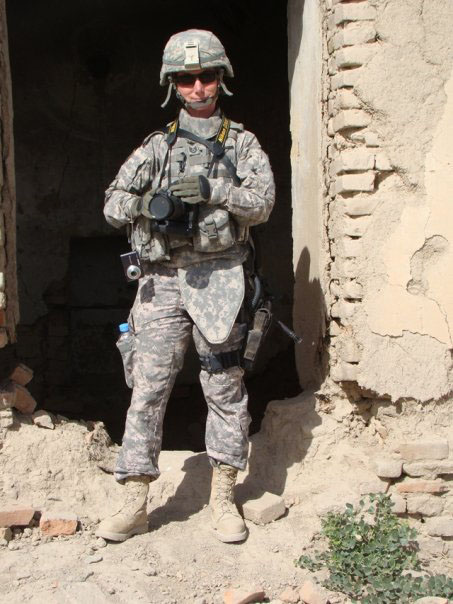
Shooting in the streets

Then-Tech. Sgt. Rebecca Corey smiles for a rare photo of herself in the streets of Afghanistan during her deployement in 2009. Corey's mission was to document the efforts of the provinial reconstruction teams, working in the region.